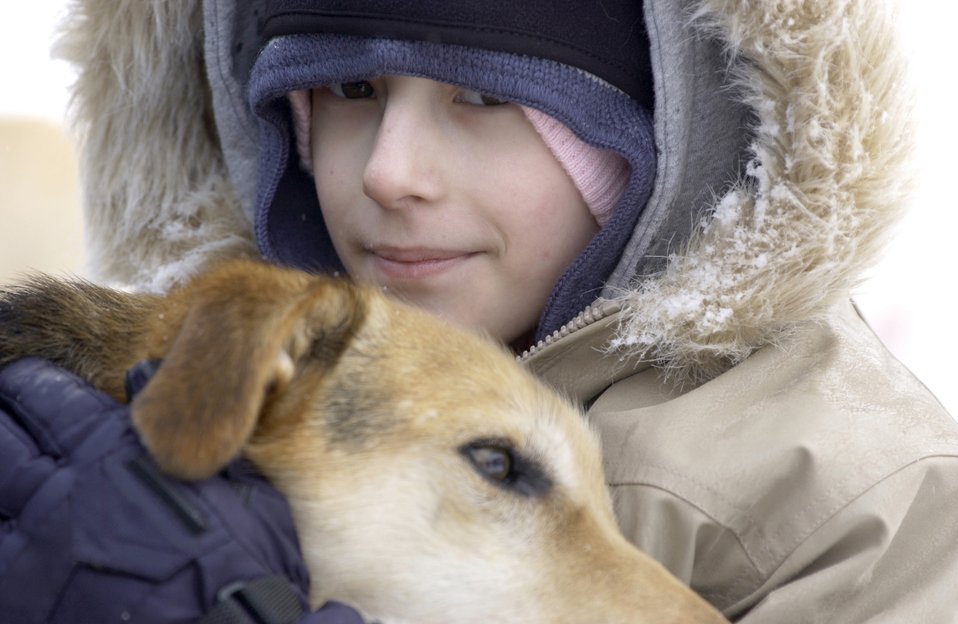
Mush!

Ten-year-old Katie Powell pets Boomerang, one of Maj. (Dr.) Thomas Knolmayer's sled dogs, before riding with the doctor on his final training run before the start of the 2006 Iditarod Sled Dog Race. Katie is the daughter of Senior Master Sgt. Chris Powell of Travis Air Force Base, Calif., and is suffering from Ewing's Sarcoma, a rare bone cancer.